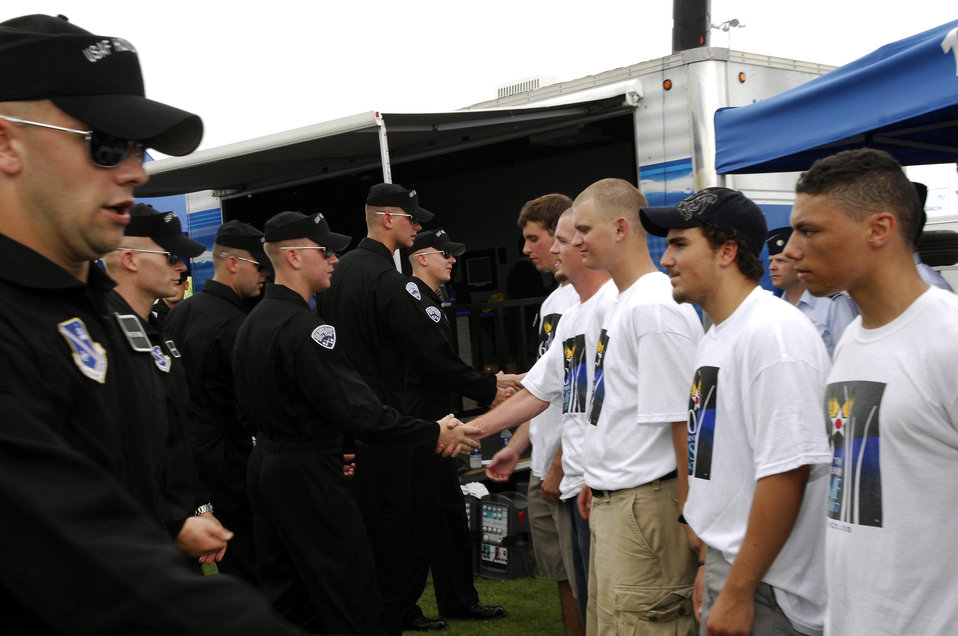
Drill team performs at NASCAR race

Members of the Air Force Drill Team congratulate new delayed enlistees before the Pepsi 400 NASCAR race July 7 at Daytona International Speedway in Florida. The team joined the Secretary of the Air Force Michael W. Wynne in celebrating the Air Force's 60th anniversary with NASCAR fans and representing the Air Force as a part of the